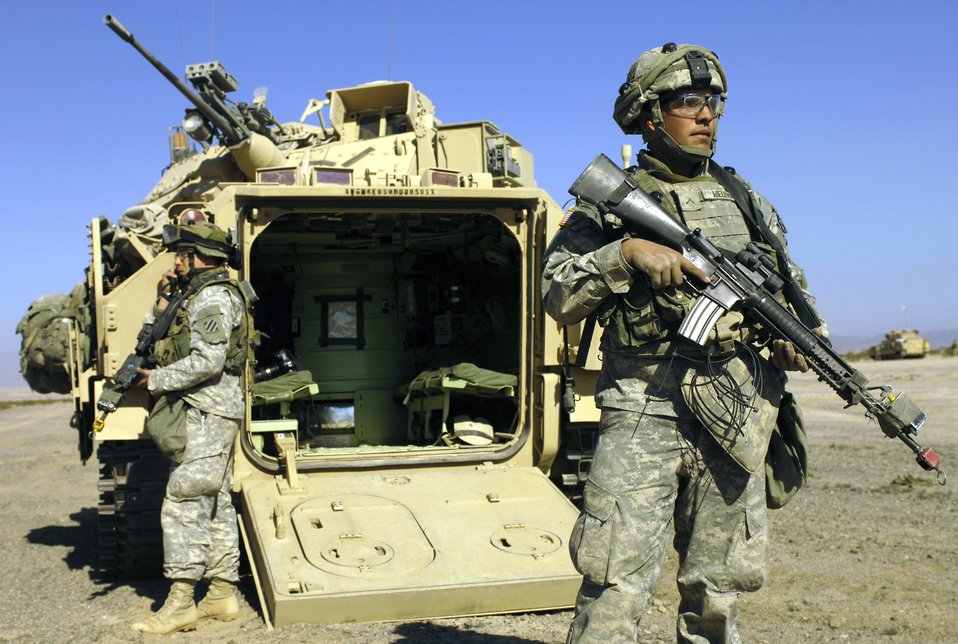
Airmen, Soldiers prepare for Iraq

Soldiers takes part in a route clearance training scenario Jan. 22 at the National Training Center at Fort Irwin, Calif. Soldiers and Airmen are trained in a number of different scenarios that will help better prepare themselves for Iraq. The Soldiers are members of Echo Company, 2-69 Armor Battalion from Fort Benning, Ga.